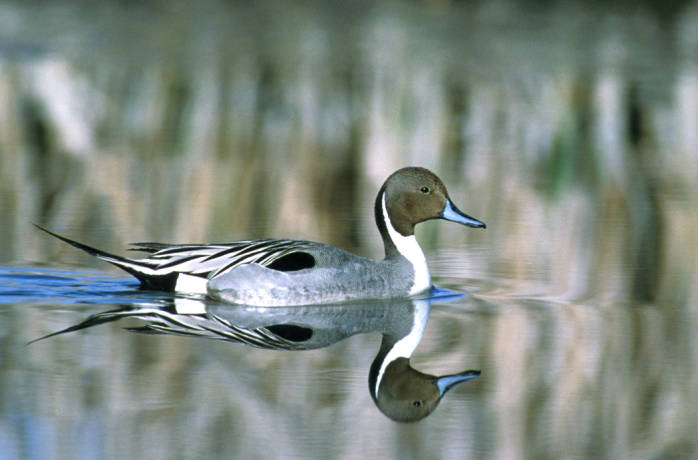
northern pintail

Klamath Lake National Wildlife Refuge, CA